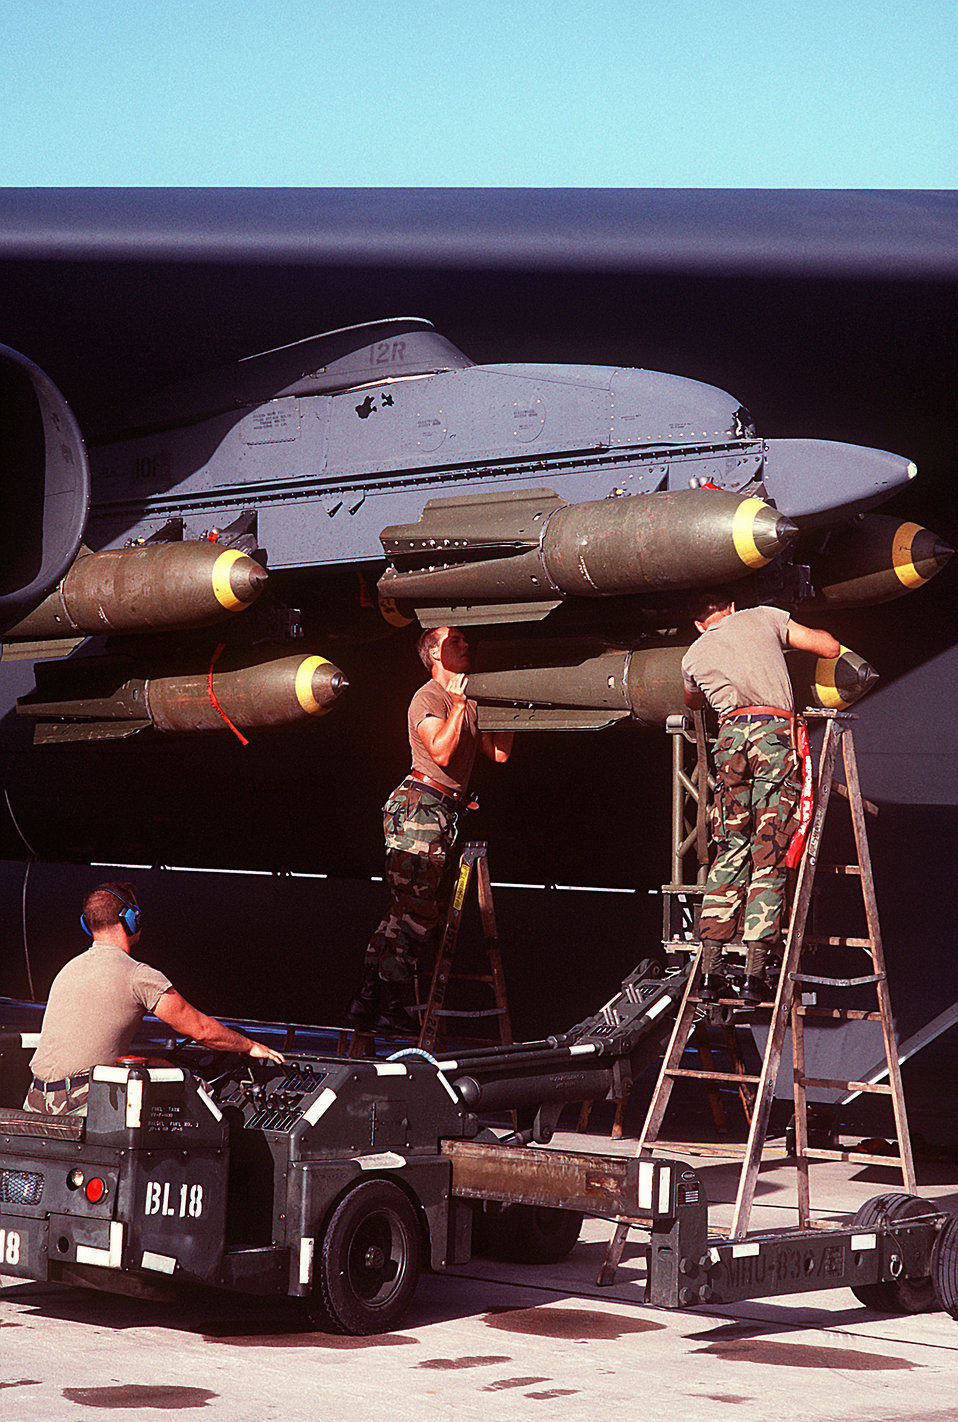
Ordnancemen load bombs on a B-52 Stratofortress

1990's -- Ordnancemen use an MJ-1 bomb loader to load Mark 117 750-lb. bombs on a B-52 Stratofortress aircraft during Operation Desert Shield.